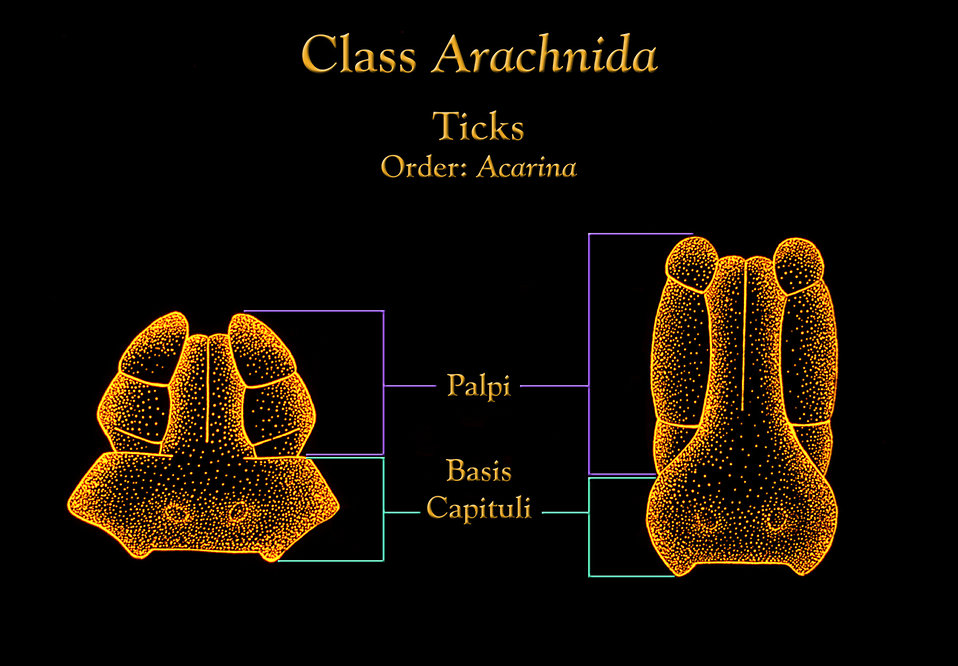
This illustration depicts the capituli of two different genera of ticks, pointing out the various mouthparts at this location.